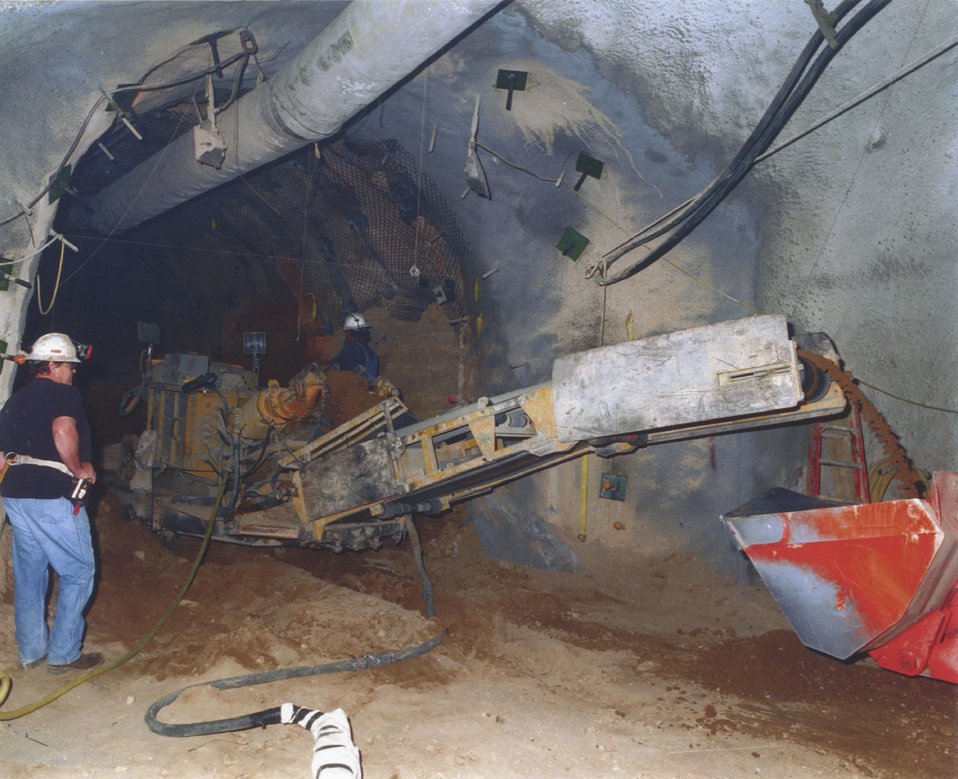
EQUIPMENT USED TO CARVE OUT THE UNDERGROUND TEST FACILITIES AT THE U1A COMPLEX.

EXPLOSIVE TESTS ARE CONDUCTED DEEP UNDER THE NEVADA DESERT BY LAWRENCE LIVERMORE NATIONAL LABORATORY PHYSICISTS AND ENGINEERS. THE SUBCRITICAL EXPERIMENTS ARE AIMED AT PROVIDING IMPORTANT DATA TO EXPERTS WATCHING OVER THE NATION'S NUCLEAR STOCKPILE.